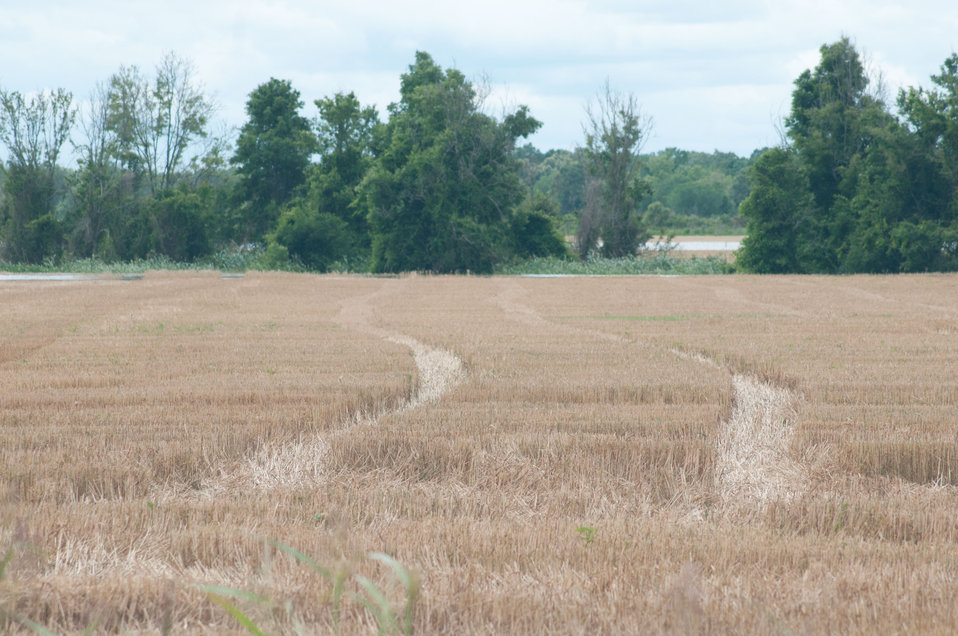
To save crops that threatened by Mississippi River floodwaters farmers harvested wheat two weeks early from the Yazoo River area of MS near Yazoo City, MS, on Monday, May 16. 2011.